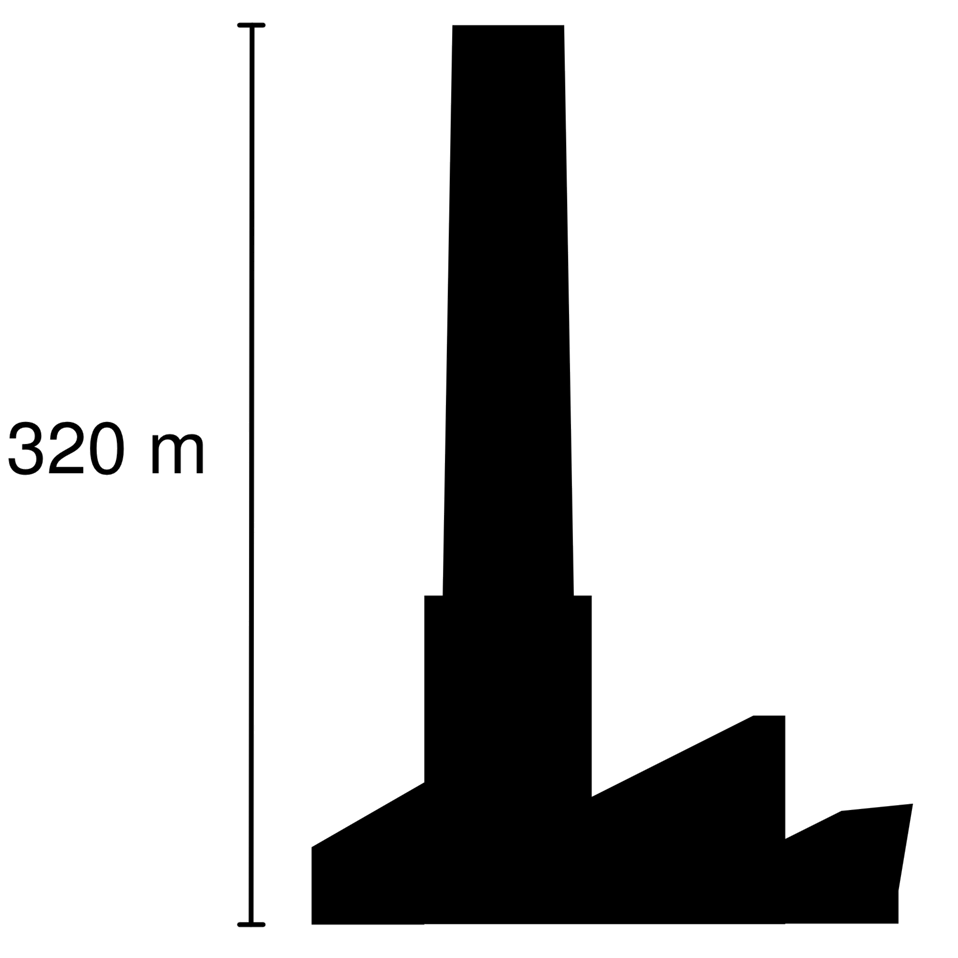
Shape of structure based roughly on the illustrations by Frank Karabassis at skyscraperpage.com.